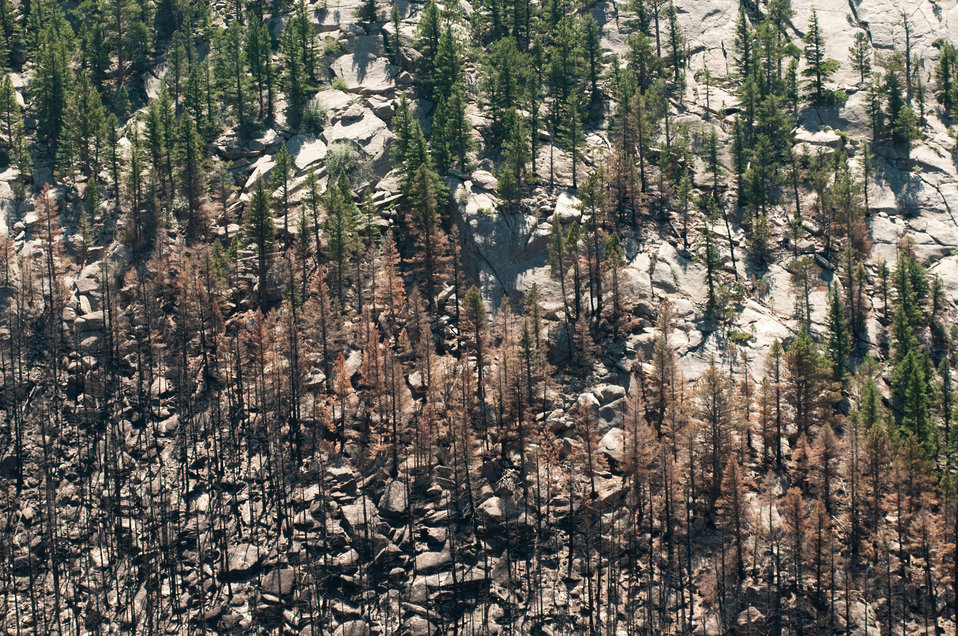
The aerial application of yellow straw continues to mitigate soil and ash runoff from the mountainous terrain leading to Seaman Reservoir, drinking water resource for the City of Greeley, on Friday, July 20, 2012, near Fort Collins, Colo. Red areas are burnt trees with pine needles that will fall tho the ground and form a mulch. Green areas are the remaining healthy trees that provide shade and protection to promote the growth of ground cover plants and shrub. Because of steep terrain, helicopters must be used to quickly deliver 1,800 tons of straw to Forest Service lands, and private and other lands that receive a seed mix and straw to promote ground cover plant growth on ash-covered lands. In total, 1,800 tons of straw will be applied during the 14-day operation. One quarter of the cost was paid by the City of Greeley and the U.S. Department of Agriculture funded the remainder. The Hewlett Gulch Fire was started by a camper’s alcohol stove, on May 14, at the saddle of a picturesque mountain ridge along the Hewlett Gulch Trail of Poudre Canyon, in the Roosevelt National Forest, 60 miles north of Denver. At it’s peak, more than 400 firefighters were battling fires being pushed by 50 mph winds that helped blacken over 12-square-miles of dry ground cover, brush and trees. Many of the trees were already dead and tinder dry from beetle-kill. The water in the reservoir remains clean and clear, while downstream water flow has gone from famous Colorado clear water to nearly black flows of water heavily laden with ash, silt, and burnt debris that recent thunderstorms have already washed down from the mountainsides.